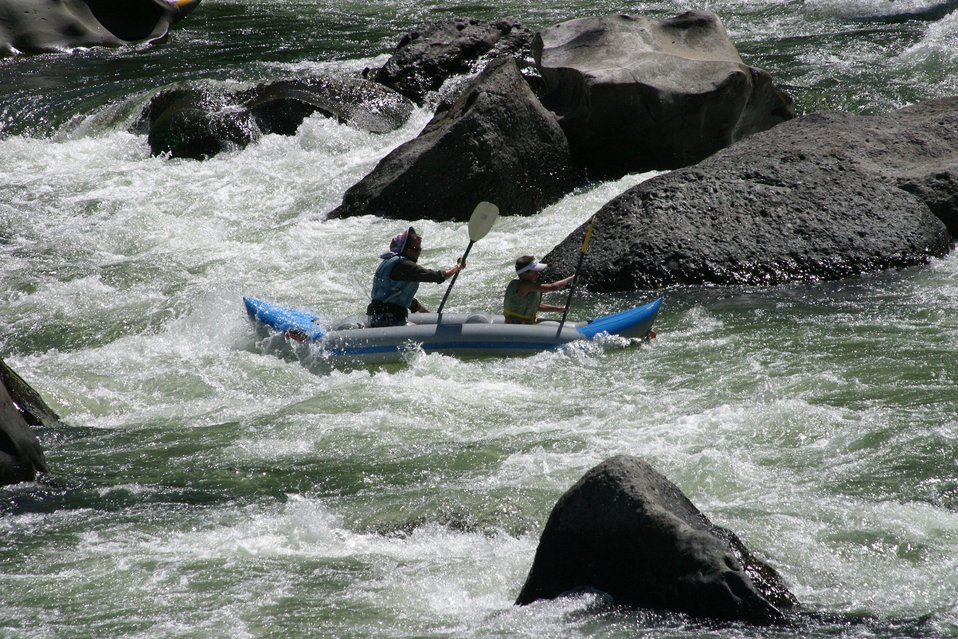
Boaters negotiate Blossom Rapids.